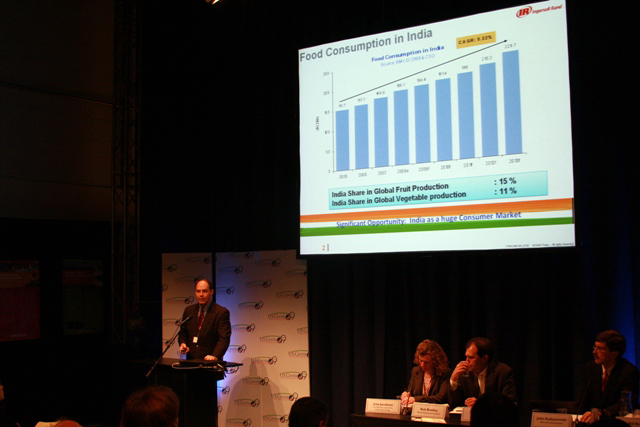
Development Agenda for Clean Energy and Transfer of Technologies

Jeff Moe of Ingersoll Rand participates in a panel presentation on the Development Agenda for Clean Energy and Transfer of Technologies at the U.S. Center at COP15, Bella Center, Copenhagen, Denmark on December 11, 2009.